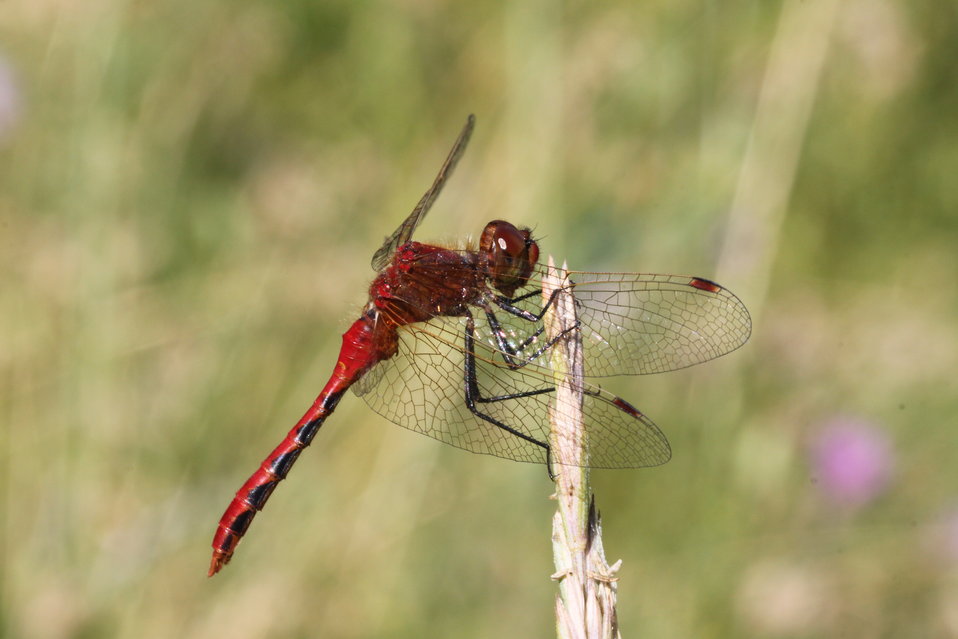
Cherry-faced Meadowhawk

Sympetrum internum perched near a wetland; it is commonly found (member of the Skimmer family )from June until October.